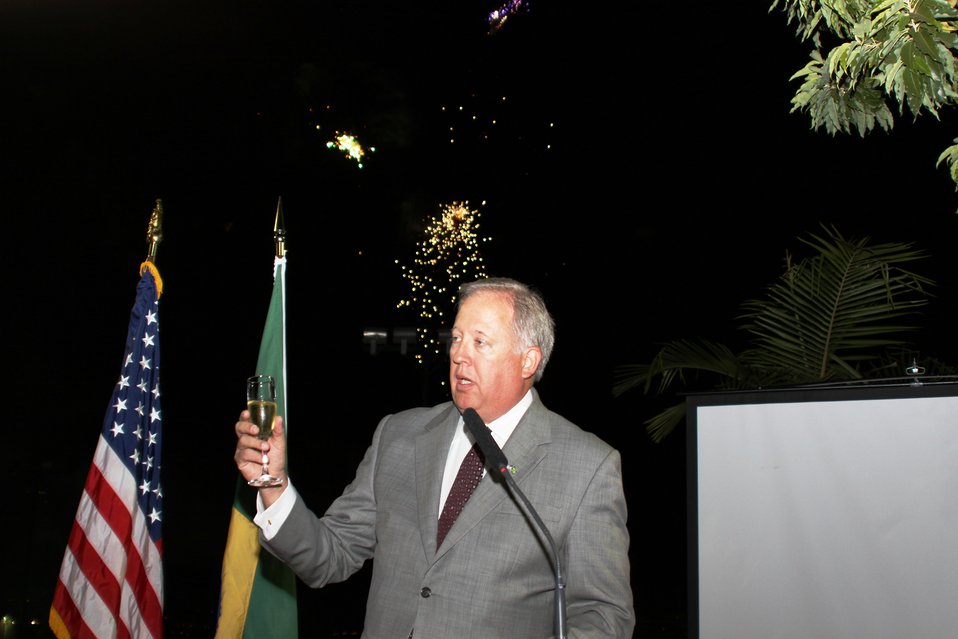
July 4th Celebration at U.S. Embassy in Brazil

U.S. Ambassador to Brazil Thomas Shannon toasts the friendship between the United States and Brazil during the 4th of July celebration at the Chief of Mission Residence in Brasilia, Brazil, on July 1, 2010.